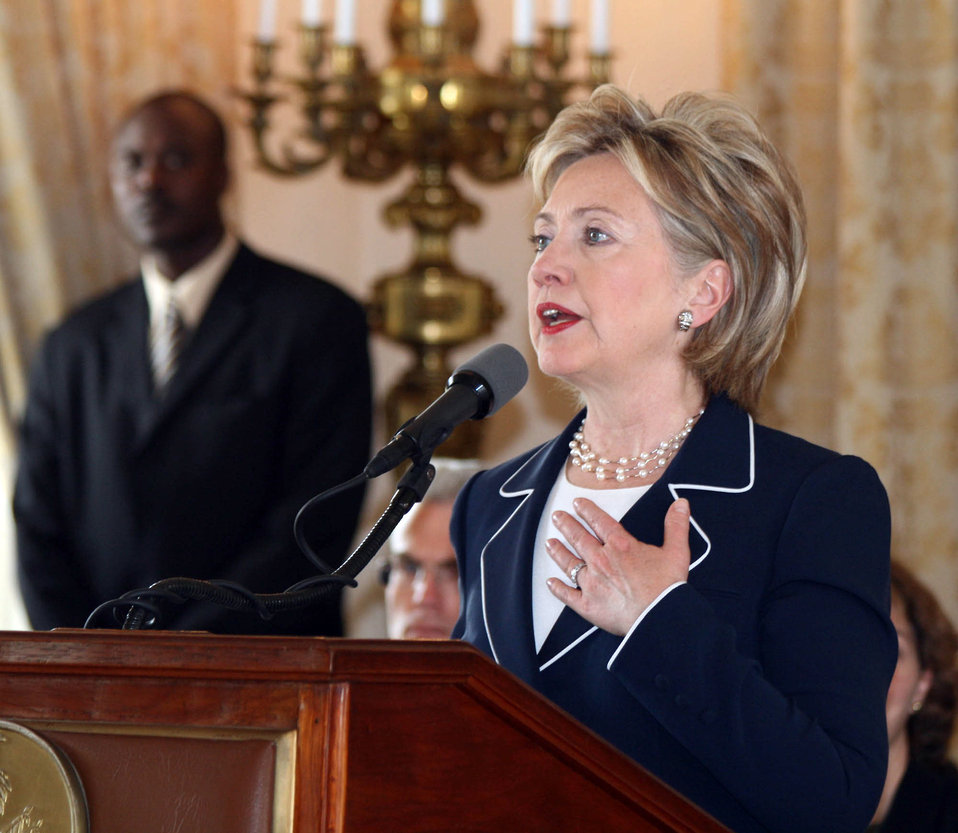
Secretary Clinton Speaks at National Palace in Haiti

U.S. Secretary of State Hillary Rodham Clinton speaks at the National Palace during a press conference, following a private meeting with the President of the Republic of Haiti, Rene Preval in Port-au-Prince, Haiti April 16, 2009.